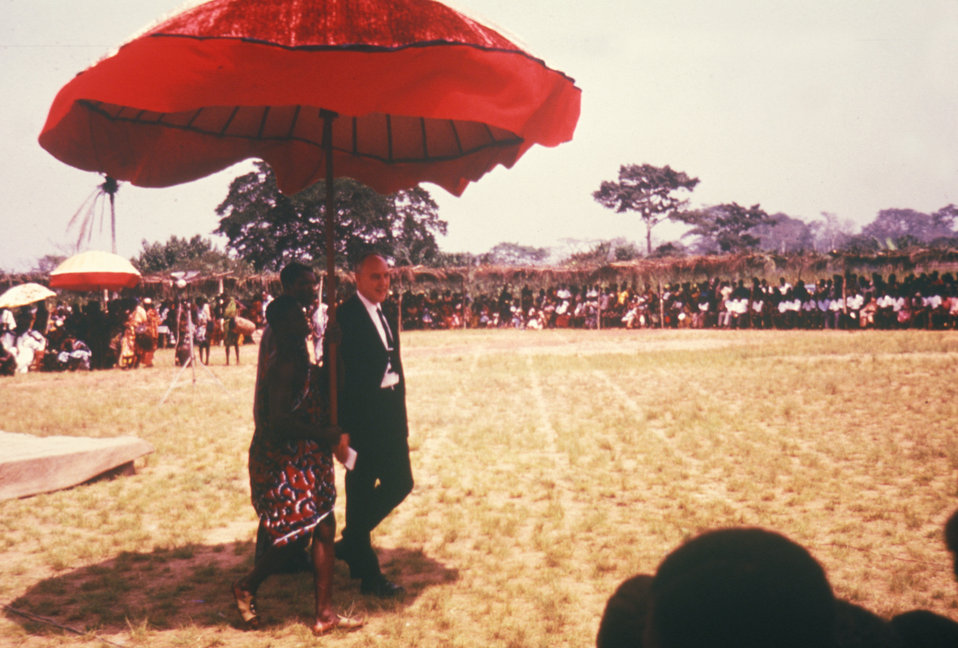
Here Dr. William Stewart is being escorted back to his seat after making a speech in West Africa in 1968.